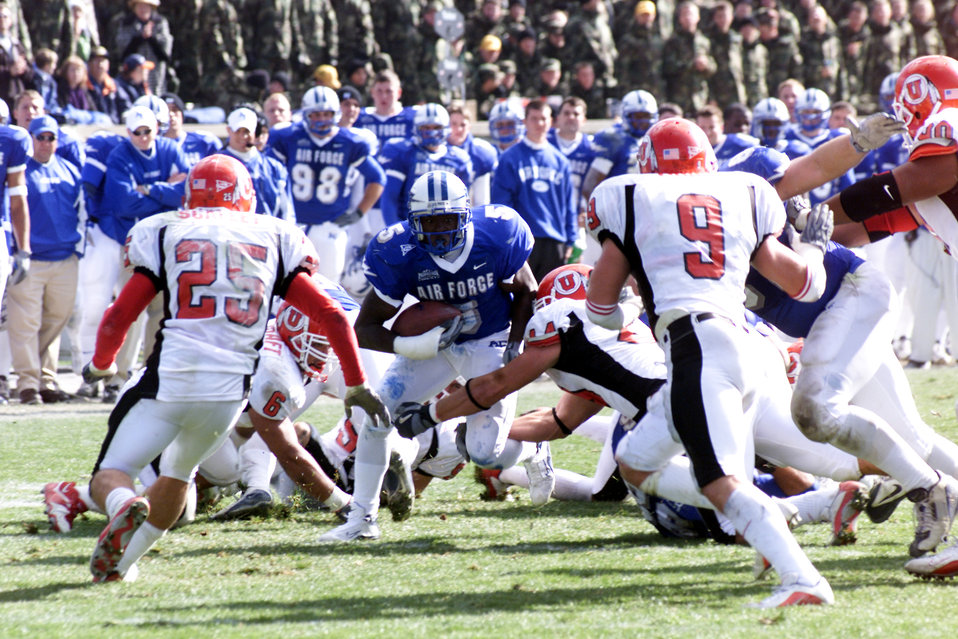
Falcons fall in triple overtime

U.S. AIR FORCE ACADEMY, Colo. -- Falcons halfback Anthony Butler looks for running room amongst the Utah defenders. The junior carried 11 times for 59 yards and one touchdown during the Falcons' 45-43 triple-overtime loss to Utah.